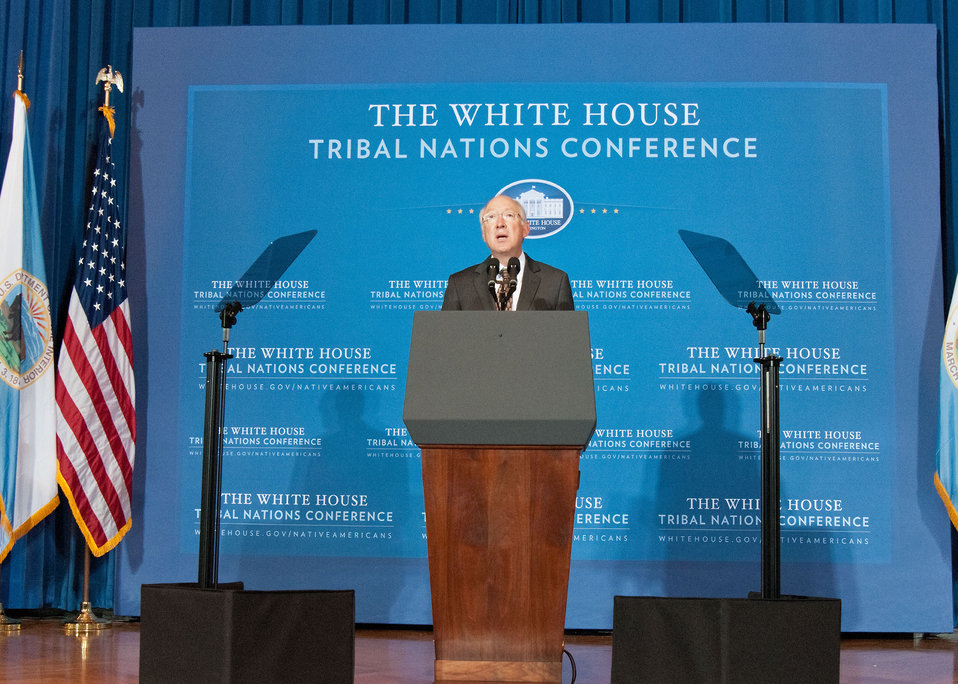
Interior Secretary Ken Salazar opens the Fourth Annual White House Tribal Nations Conference at the U.S. Department of Interior in Washington D.C. on Wednesday, Dec. 5, 2012. Cabinet members Interior Secretary Ken Salazar, Agriculture Secretary Tom Vilsack, Education Secretary Arne Duncan, Treasury Deputy Secretary Neal Wolin, Commerce Acting Secretary Rebecca Blank, Health and Human Services Secretary Kathleen Sebelius discussed the gains and progress of the Obama Administration concerning Native American Tribal Nations.